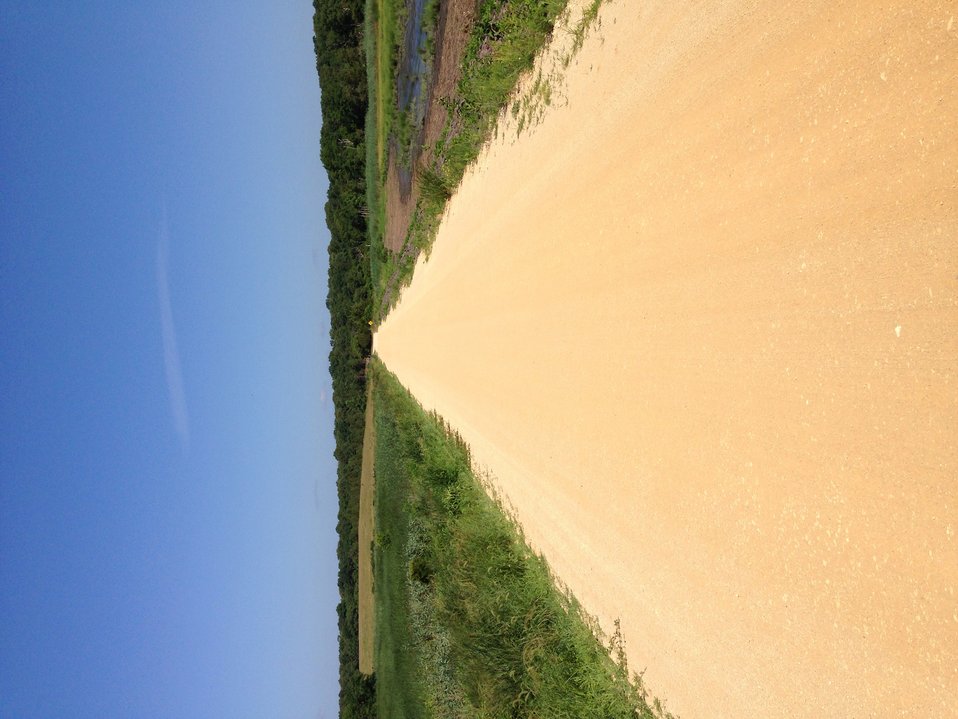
Forsythe wildlife drive after hurricane repairs

North dike looking west.